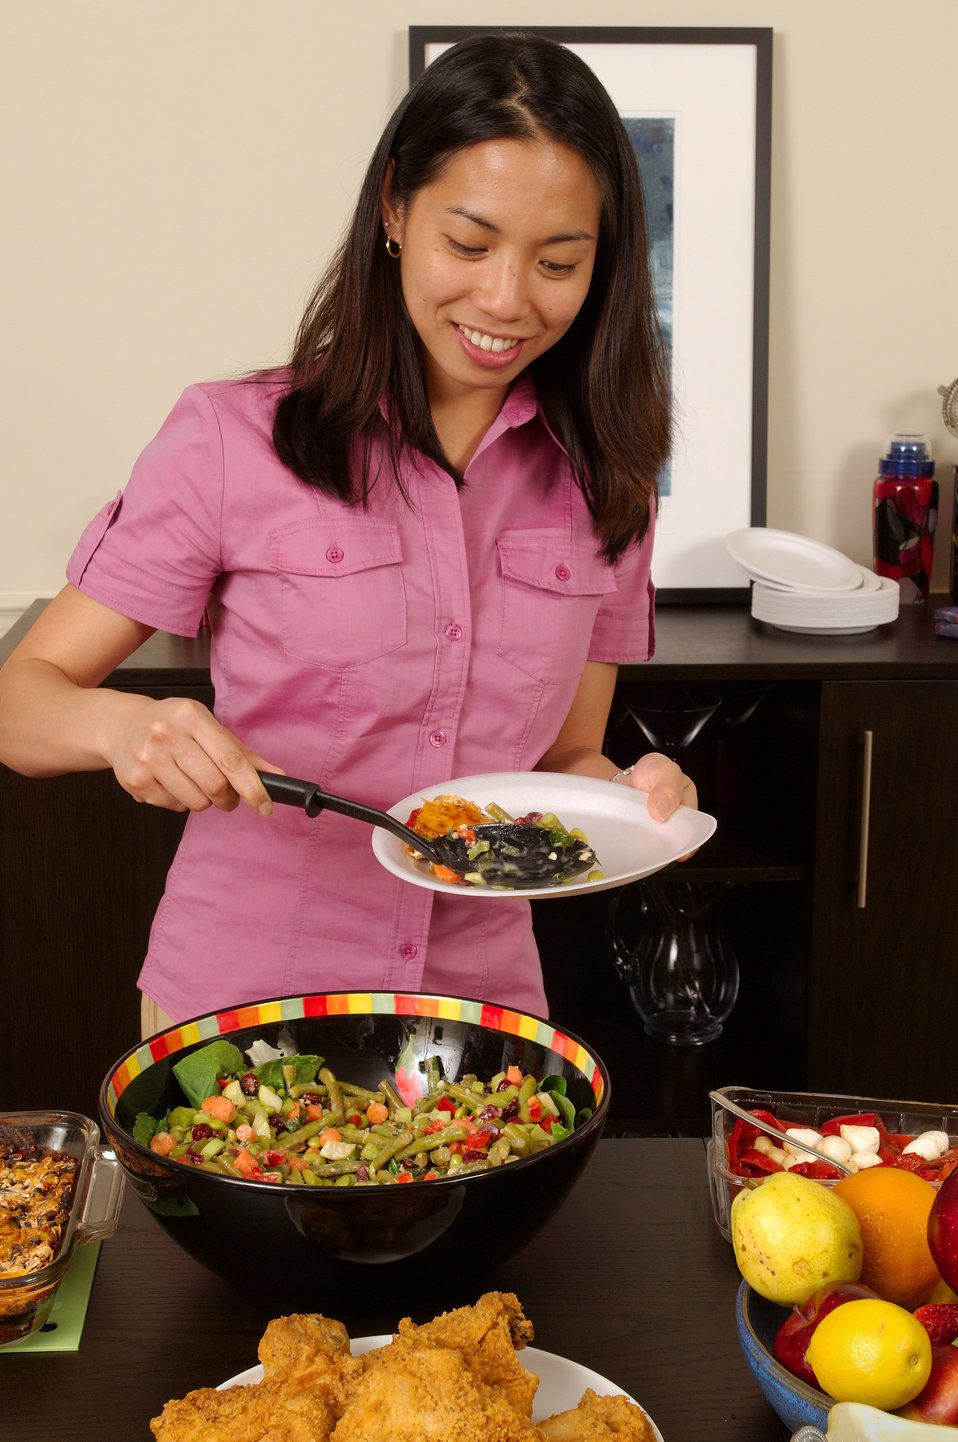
This image depicts a young woman serving herself from a dining table, atop which was plated a large quantity of foods representing a number of different food groups: grains, fruits, vegetables, milk products, meats/poultry/fish, and nuts/seeds/legumes. Here, she was about to add what appears to be some edamame salad to her plate.